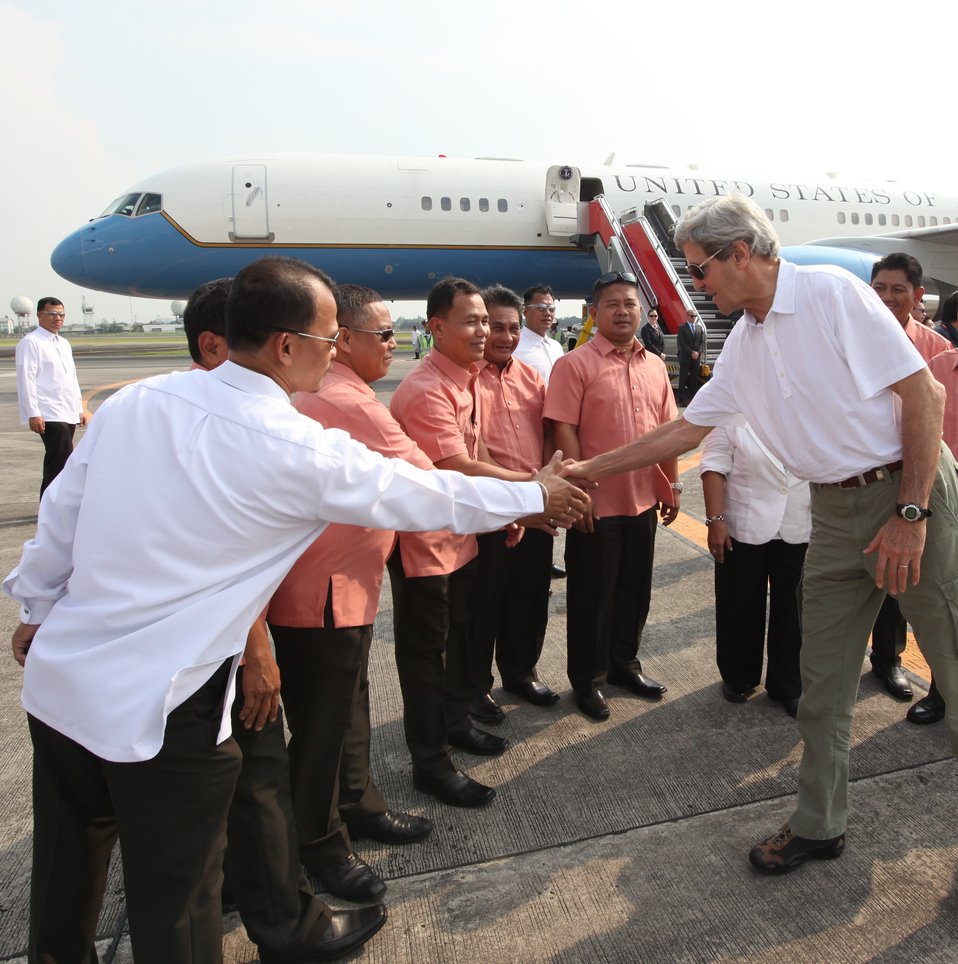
U.S. Secretary of State John Kerry Shows His Gratitude to Those Who Assisted Him in the Philippines

Before departing the Philippines, U.S. Secretary of State John Kerry thanks those who assisted him in leaping from one event to another during his visit to Manila and Tacloban on December 18, 2013.